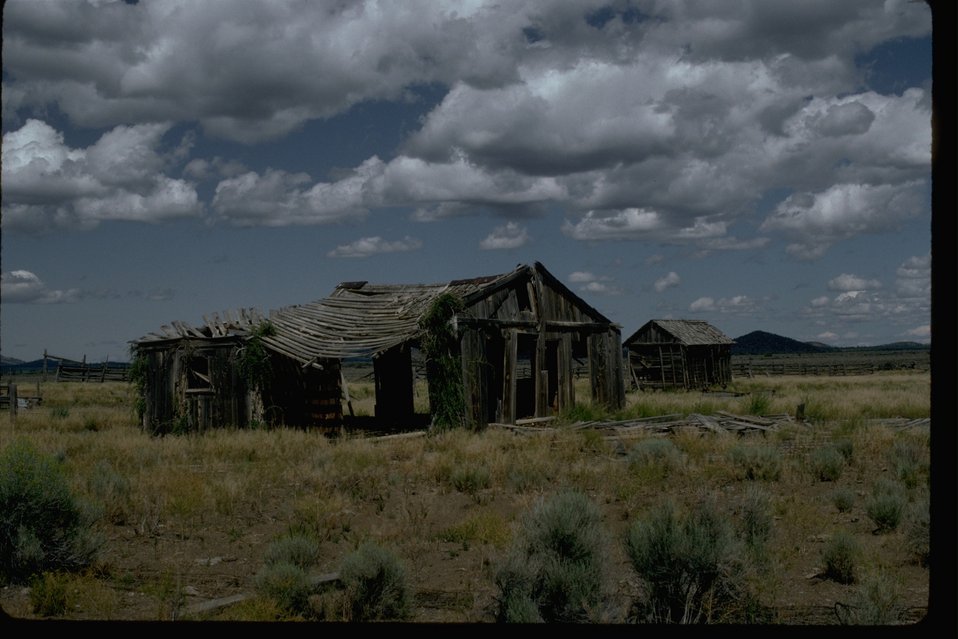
Cabin at Fort Rock.